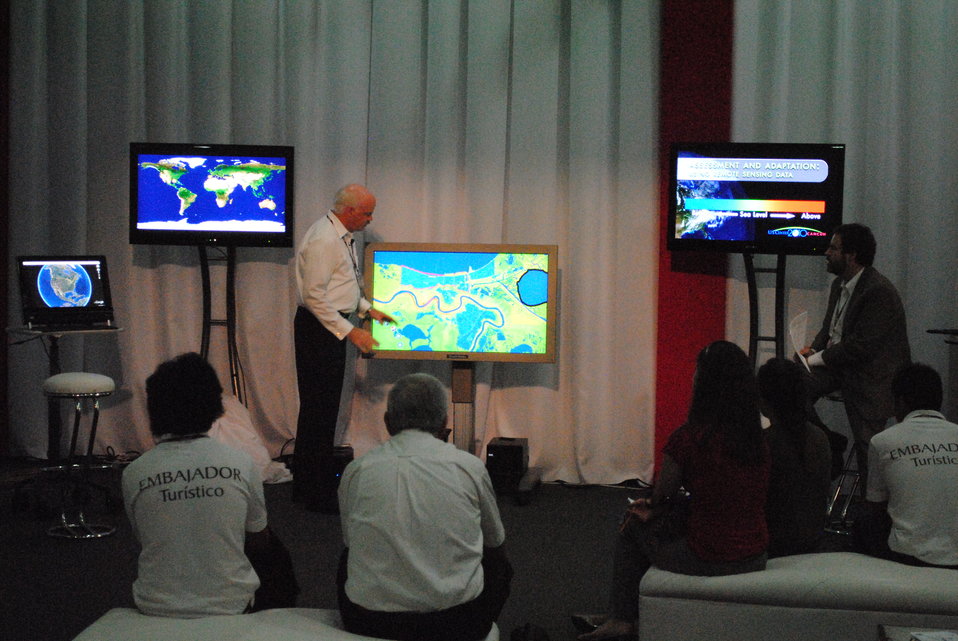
Dave Jones Presents Images of the United States From the Touch Table

Dave Jones, President and CEO of Storm Center Communications, Inc., demonstrates how climate change affects the United States on the Envirocast Vision Touch Table at the U.S. Center at COP-16 in Cancun, Mexico, on December 1, 2010.